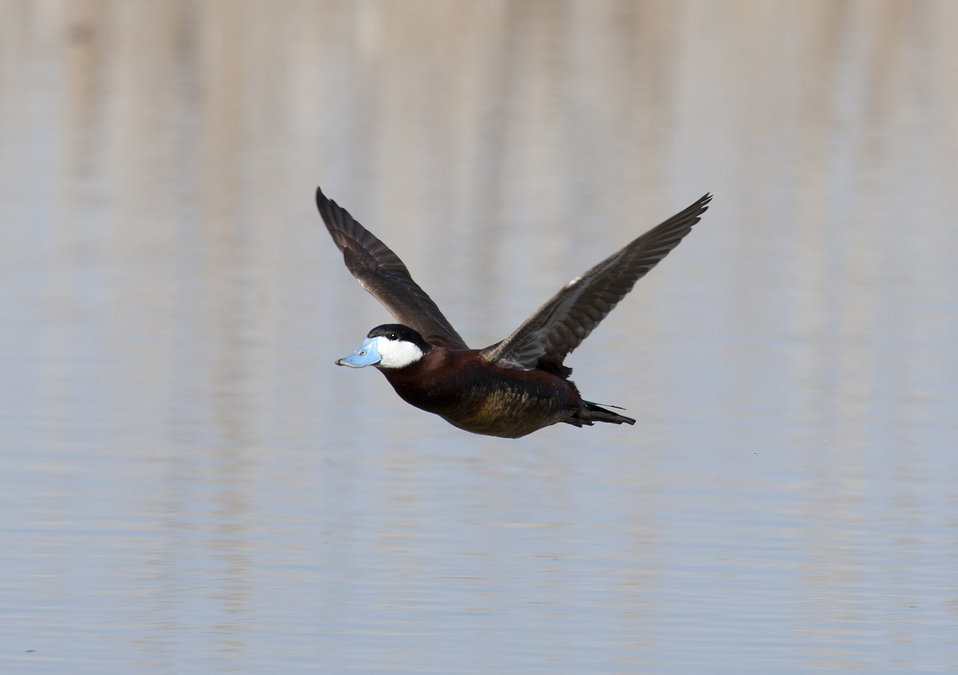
Ruddy Duck in Flight

The lands of the refuge were established to protect and provide habitat for migratory birds that cross State lines and international borders and are by law a Federal trust responsibility.

The refuge is of great value to waterfowl and shorebirds, as well as other migrating water-dependent bird species, because of the diversity of wetland and upland habitats that provide for the diverse life cycle needs of these species.